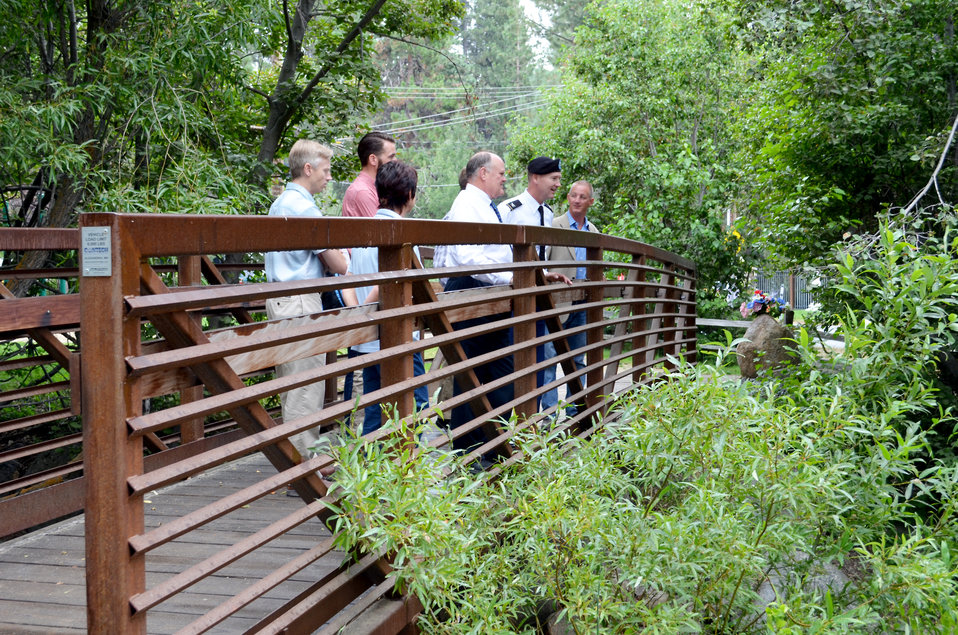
Col. Farrell tours Tahoe’s Third Creek restoration site

130819-A-QE256-022 – Col. Mike Farrell (second from right), commander of the U.S. Army Corps of Engineers Sacramento District, and Lee Bass (third from right), acting deputy for programs and project management for the district, look over a newly-installed pedestrian bridge crossing Third Creek near Incline Village, Nev., Aug. 19, 2013. The Sacramento District and the Incline Village General Improvement District recently completed an ecosystem restoration project along Incline Creek and Third Creek. Both creeks have been a large source of sediment for nearby Lake Tahoe, reducing its prized clarity. The restoration project returned the creeks to a more natural state, reducing their sediment discharge into the lake. Newly planted vegetation along the creek bank helps control erosion, a major source of sediment discharge.